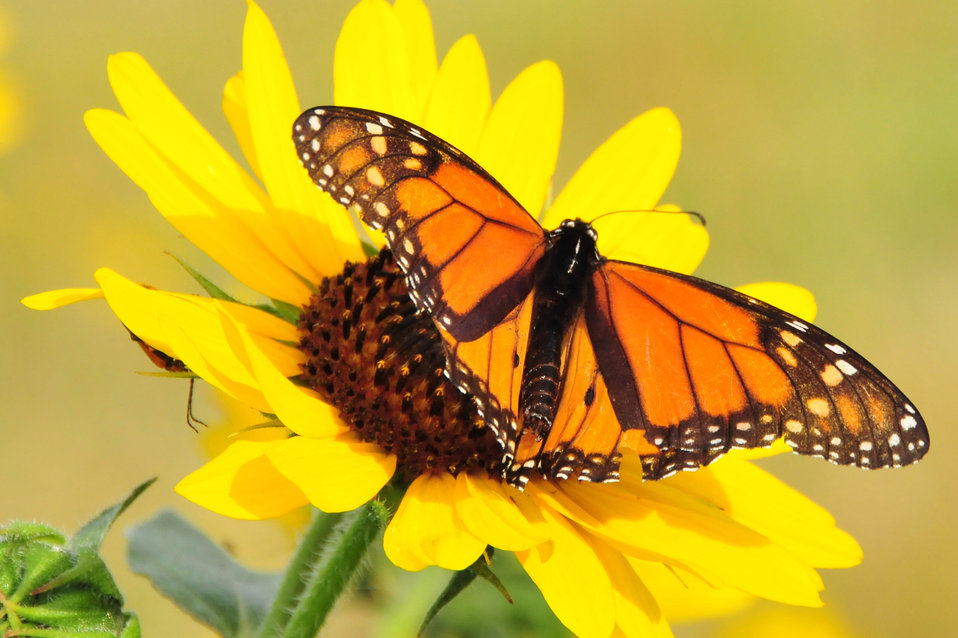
Monarch on Sunflower Lacreek NWR